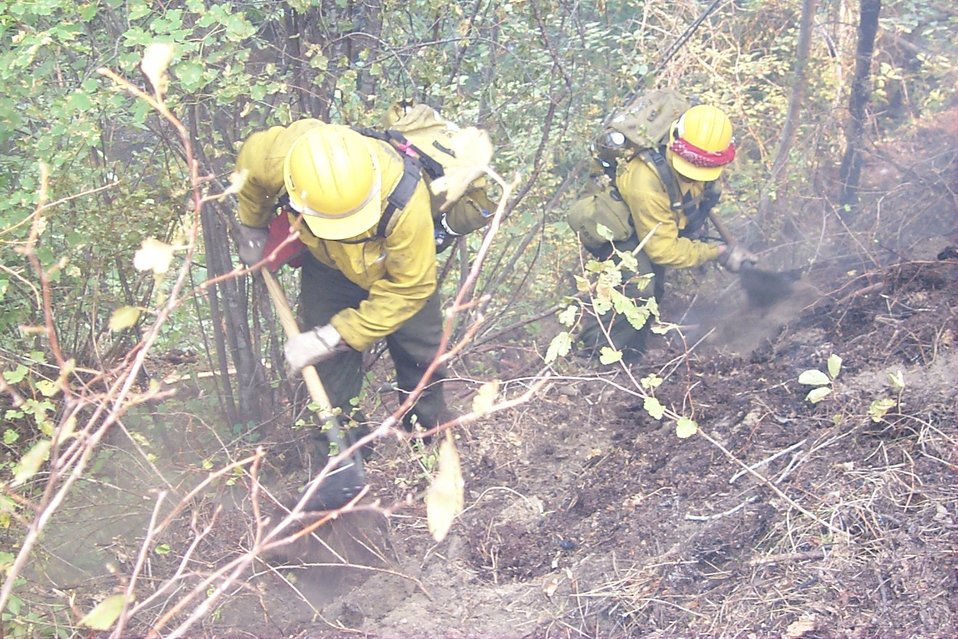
Line crew Fire Clearwater Fire Salmon Field Office USRD Upper Snake River District